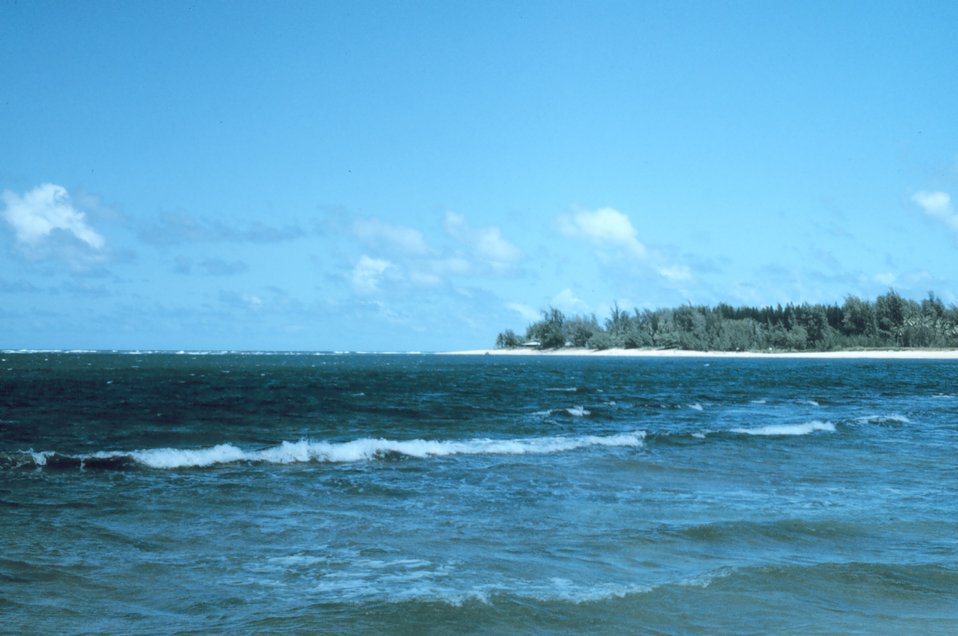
Lumahai Bay